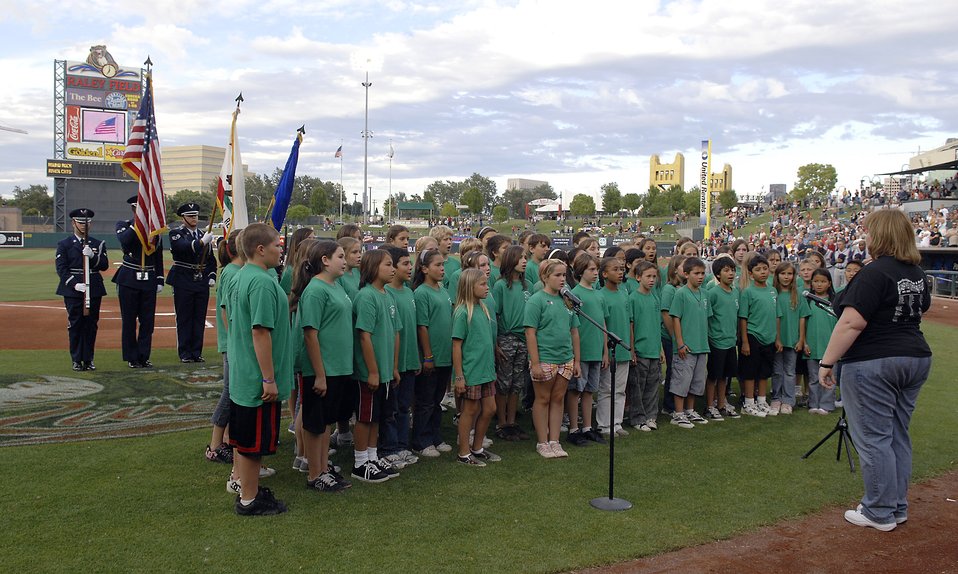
Sacramento Rivercats host Air Force Week event

A fourth, fifth and sixth grade choir from Northridge Elementary School sings the national anthem before a local minor league baseball game June 4 during Air Force Week in California. The purpose of Air Force Week is to inform and educate the American public about the importance and roles of the Air Force in America's national defense.